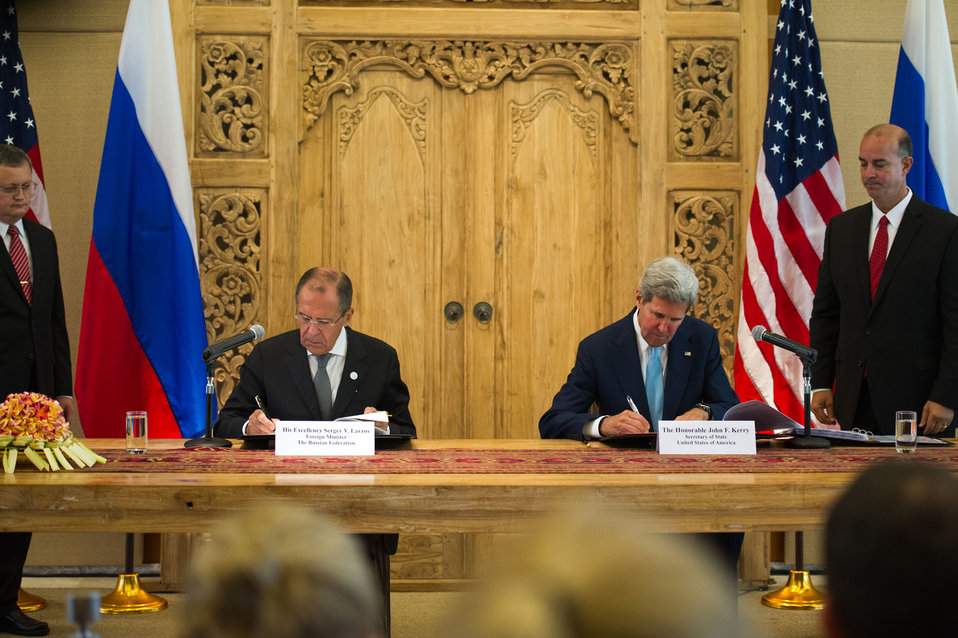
Secretary Kerry and Russian Foreign Minister Lavrov Sign the Nuclear Risk Reduction Centers Agreement

U.S. Secretary of State John Kerry, with Russian Foreign Minister Sergey Lavrov, signs the Nuclear Risk Reduction Centers (NRRCs) Agreement in Bali, Indonesia, on October 7, 2013.